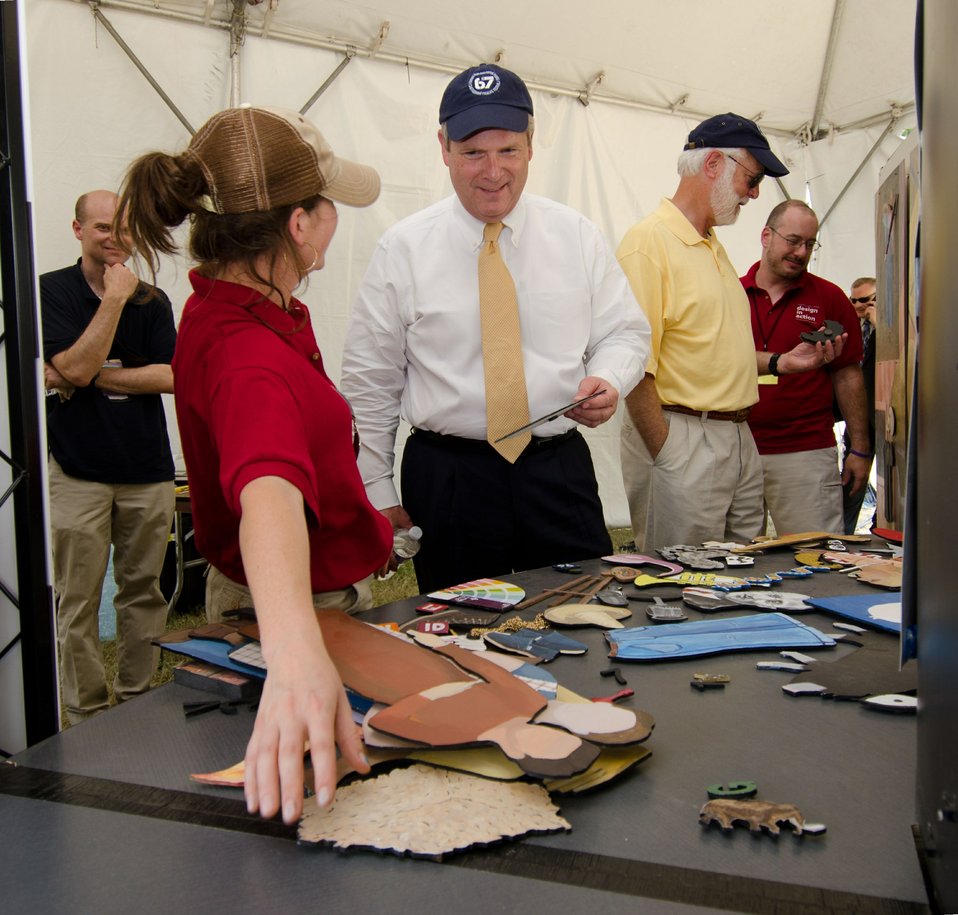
Agriculture Secretary Tom Vilsack listens to Iowa State University Integrated Studio Arts lecturer Jennifer Drinkwater in her Morrill Hall interactive studio project, 'Working Over Wood: Recomposing the Grant Wood Murals.' Visitors can recompose the nine-panel 1934 Grant Wood mural, 'When Tillage Begins, Other Arts Follow,' by positioning painted magnetic pieces in a metal panel, reflecting their own interpretations at the 2012 Smithsonian Folklife Festival, on the National Mall in Washington, D.C. on Friday, June 29, 2012. The University says, “Iowa State’s folklife festival exhibit highlights the central role of design in the land-grant mission, and extension’s past, present and the future impact on communities. It demonstrates a unique partnership between the College of Design and Extension and Outreach in applying creative problem solving society’s complex challenges. The exhibit, “Transforming Communities: Design in Action,” is inspired by Abraham Lincoln’s 1862 national call to “think anew and act anew” to solve the monumental challenges of the era that spawned the Morrill Act. It features examples of the university's completed and ongoing projects in Iowa communities, touch screen workstations with games for children and adults, and interactive activities with Iowa State faculty and staff.” One of the three themes this year is “Campus and Community.” It celebrates the 150 years of the USDA and the Land-Grant University System. The U.S. Department of Agriculture (USDA) and the Land-Grant system extend education across the country, contributing to American agriculture success and rural prosperity. “Campus and Community” has demonstrations, discussions, hands-on activities, and entertainment to that showcase the many ways that this partnership works to improve American agriculture and rural life.